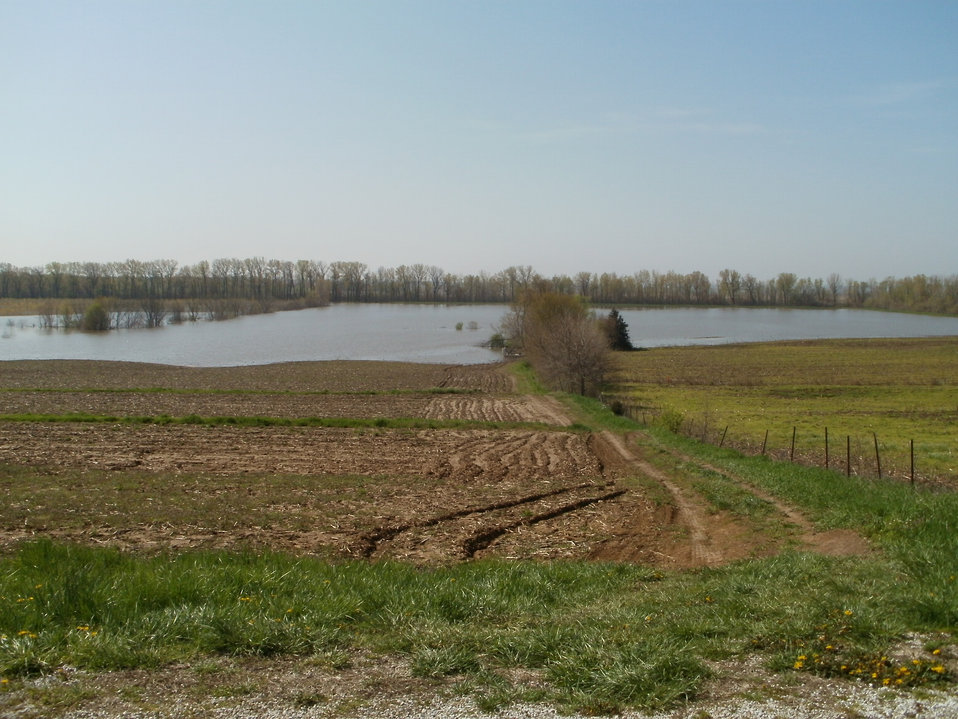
Cropland owned by John R Wilson and James and Susan Cox is an example of annually tilled cropland that would normally be in the process of being planted with corn or soybeans at this time of year. This acreage has been or will likely be enrolled in the annual Direct and Counter-Cyclical Program administered by the U.S. Department of Agriculture (USDA) Farm Service Agency (FSA). Approximately 115 acres of cropland on these two farms is currently under water due to the break in the Camp Creek levee. These farms are approximately one mile west of the Illinois River and are located in Section 14 of Versailles Township in Brown County, IL. USDA photo Randy Tankersley.